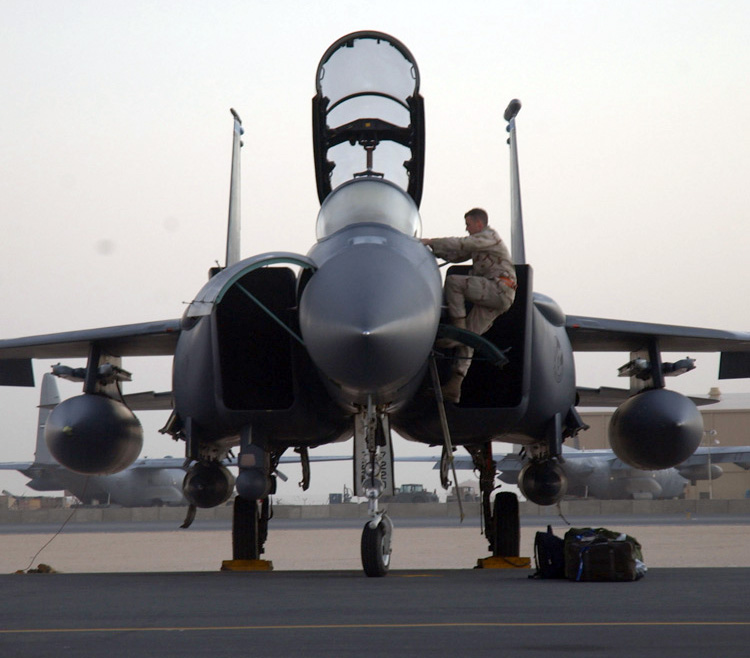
Deployed fighters

SOUTHWEST ASIA (AFPN) -- A crew chief climbs into the cockpit of an F-15E Strike Eagle and conducts preflight inspections before departure from a deployed location here Jan. 25. The Strike Eagles were returning to their home station at Royal Air Force Lakenheath, England. The aircraft were assigned to the 379th Air Expeditionary Wing.